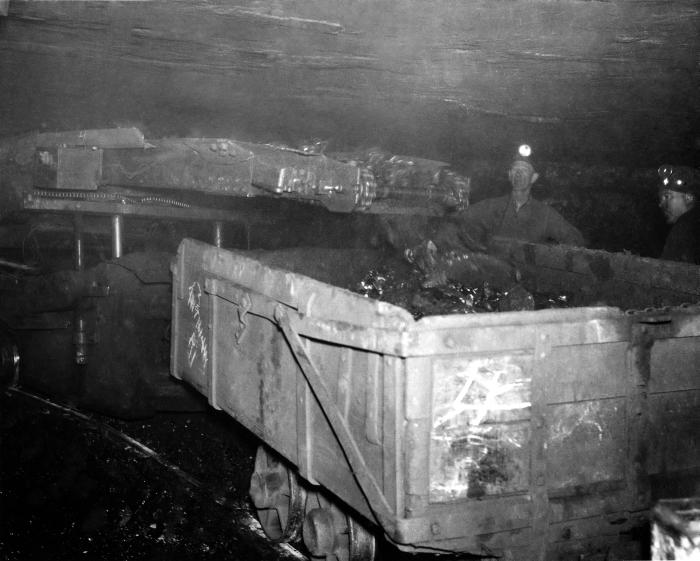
This historic image provided by the Center for Disease Control's (CDC), National Institute for Occupational Safety and Health (NIOSH), depicted two men inside an Indiana coal mine, who were overseeing the filling of a coalbin railcar by way of a conveyor belt driven flow of raw coal. Note how dusty the atmosphere was inside the closed confines of the mine shaft, and even more importantly, that neither man was wearing any filtered breathing devices. Mining coal, especially under circumstances such as these close quarters, facilitated coal dust inhalation, thereby, predisposing miners to the long-term negative health effects of this profession such as 'black lung disease', or 'coal-workers' pneumoconiosis' (CWP). Today, the Federal government's stringent regulations on the level of coal dust permissible in the air of a coal mine, and the requisite use of filtered breathing devices, has dramatically lowered the number of cases of black lung disease.